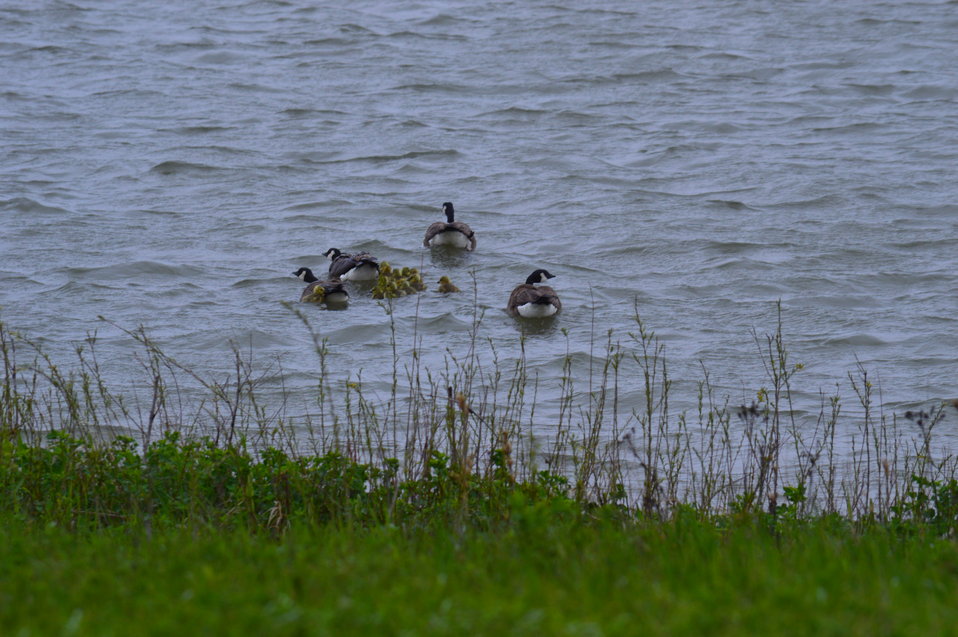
Canada geese and goslings

Scenery and wildlife and Audubon National Wildlife Refuge in North Dakota.